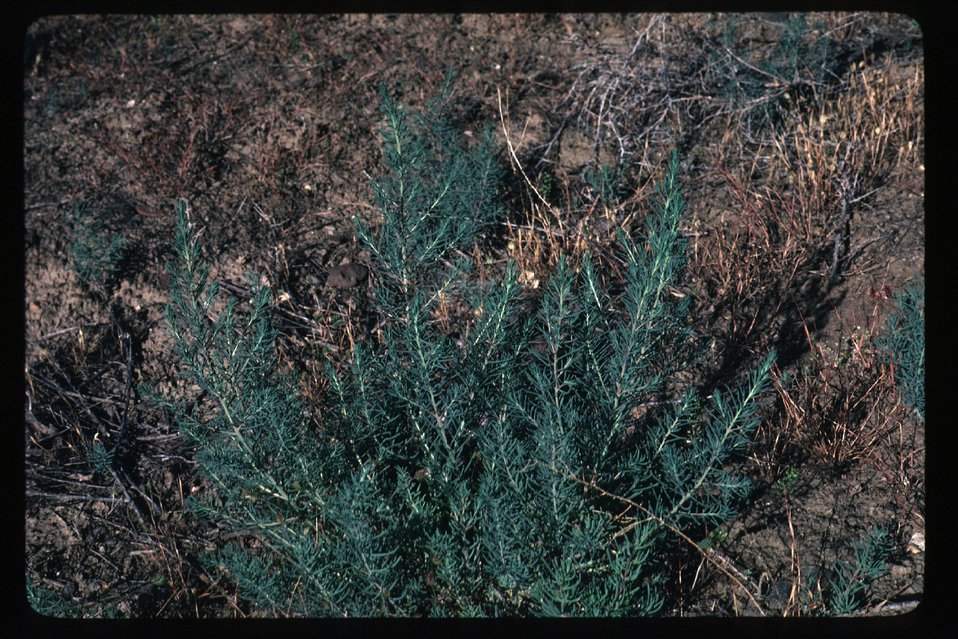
Seuda Brush, grasses Wildflowers